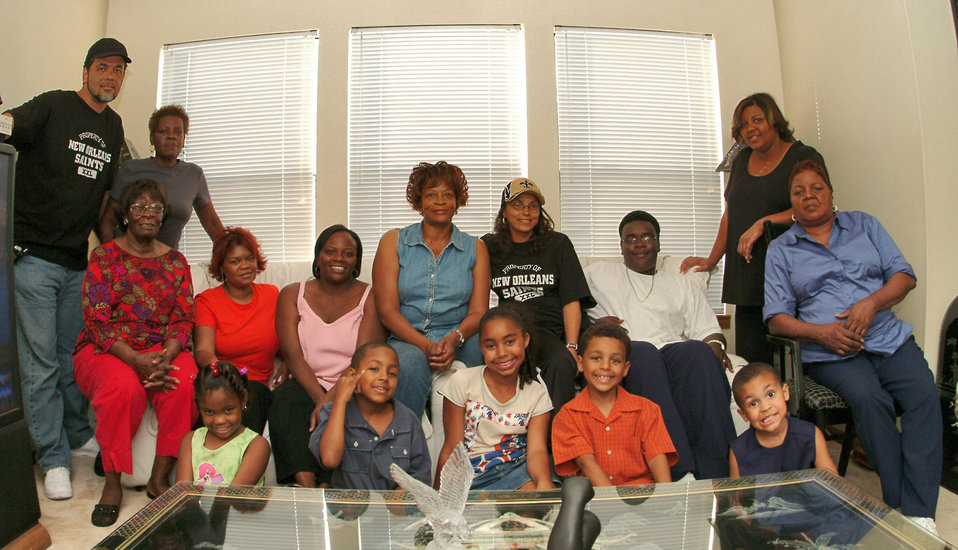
Hospitatlity

HURLBURT FIELD, Fla. -- Fifteen members of Tech. Sgt. Christopher Reeves' family from New Orleans enjoy Air Force hospitality while they worry about what they will return home to when they are allowed to go back in the city. Seven more members of the family are not pictured. Sergeant Reeves is assigned to the 16th Logistics Readiness Squadron here.